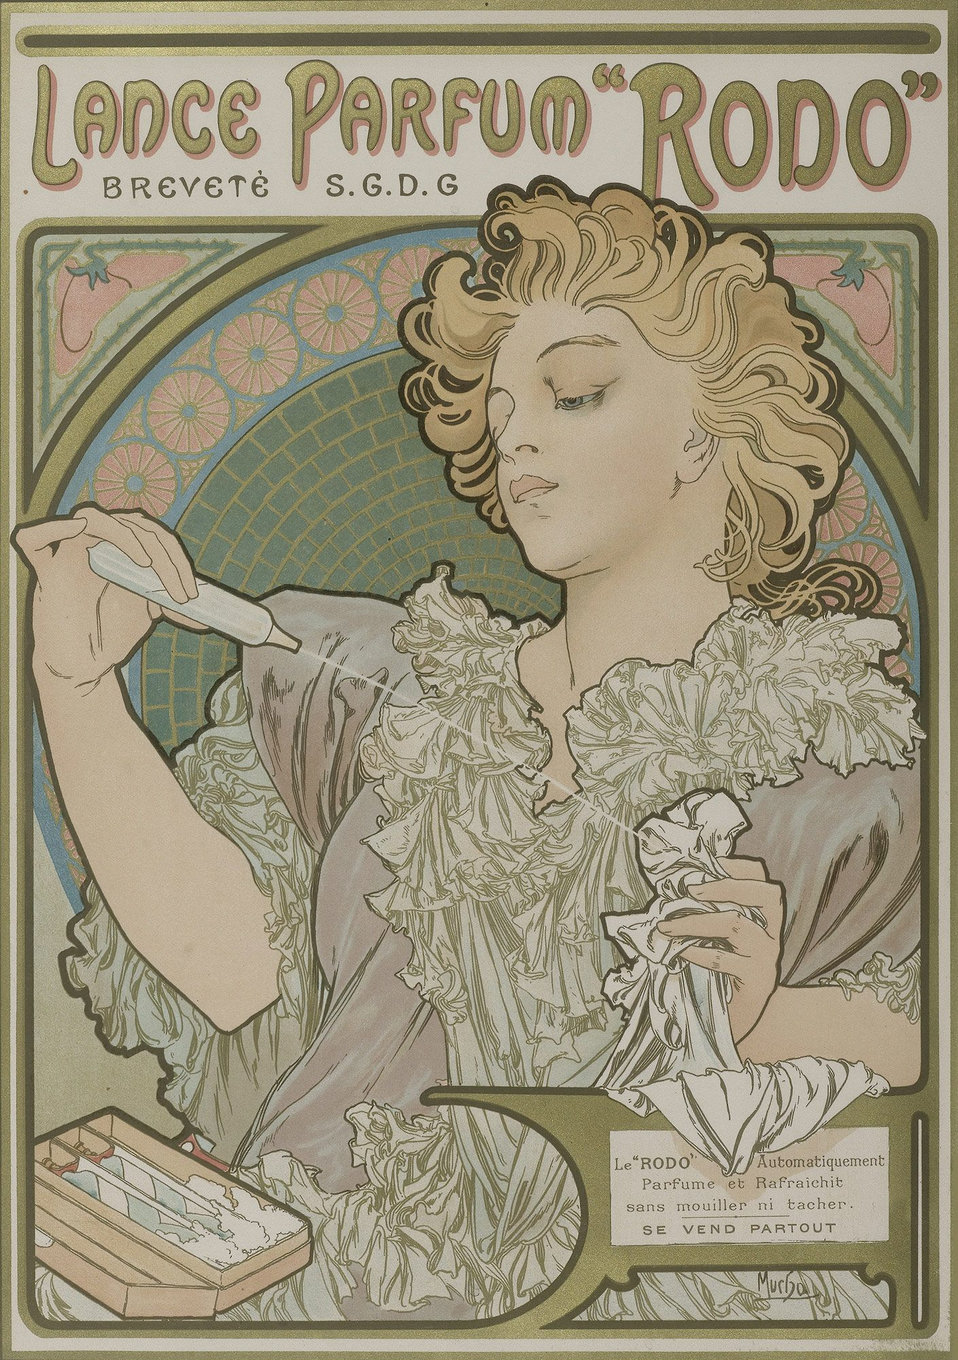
Lance Parfum Rodo 1896-97 Lithographie couleurs. Signé Mucha dans la pierre en bas à droite. 43x30 cm.